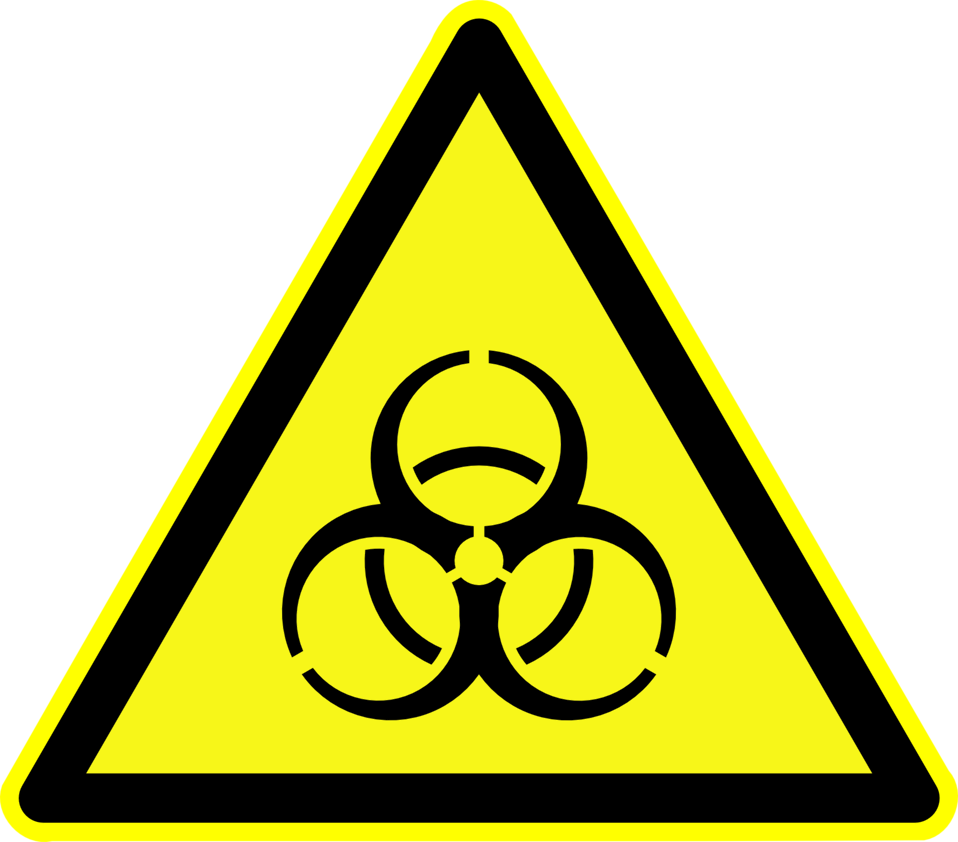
Deutsch: Warnung vor Biogefährdung, Warnzeichen D-W016 nach DIN 4844-2 Biohazard, warning sign D-W016 according to German standard DIN 4844-2